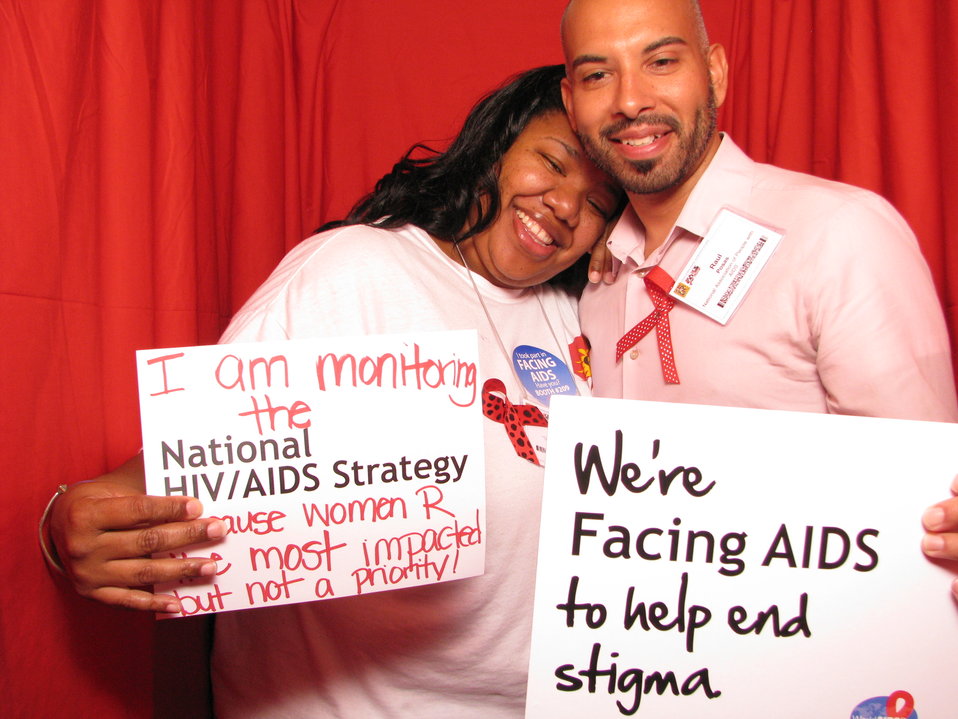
I am monitoring the National HIV/AIDS Strategy because women R the most impacted but not a priority! We're FACING AIDS to help end stigma.

From the AIDS.gov photo booth at the U.S. Conference on AIDS, September 2010 (Orlando, FL).